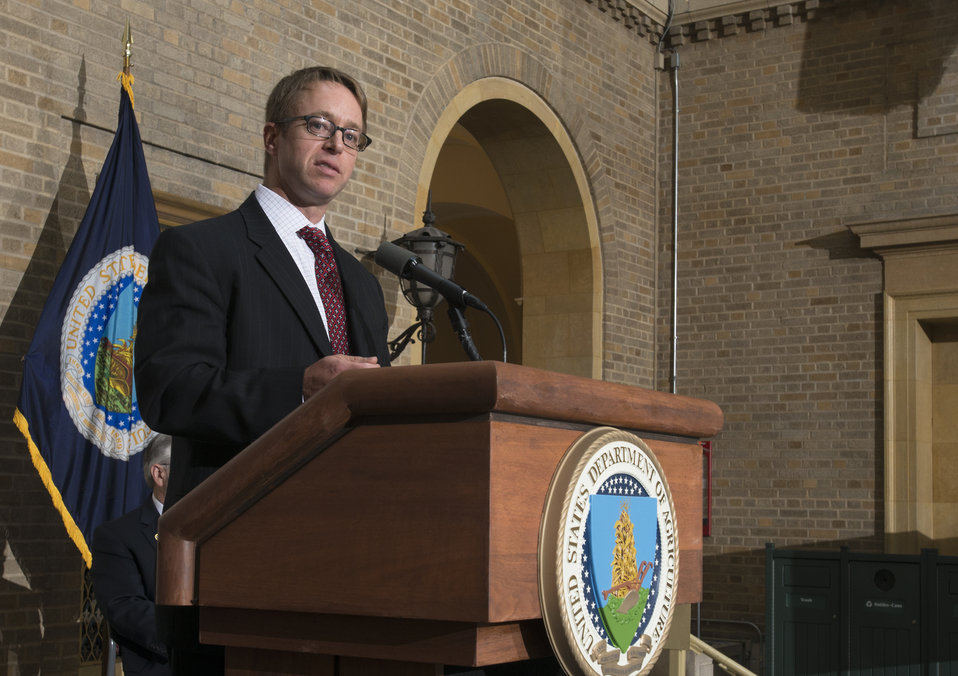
U.S. Department of Agriculture (USDA) National Resources and Conservation (NRCS) Chief Jason Weller speaks to Ducks Unlimited/USA Rice Federation event at USDA in Washington, D.C. on Tuesday, May 6, 2014.